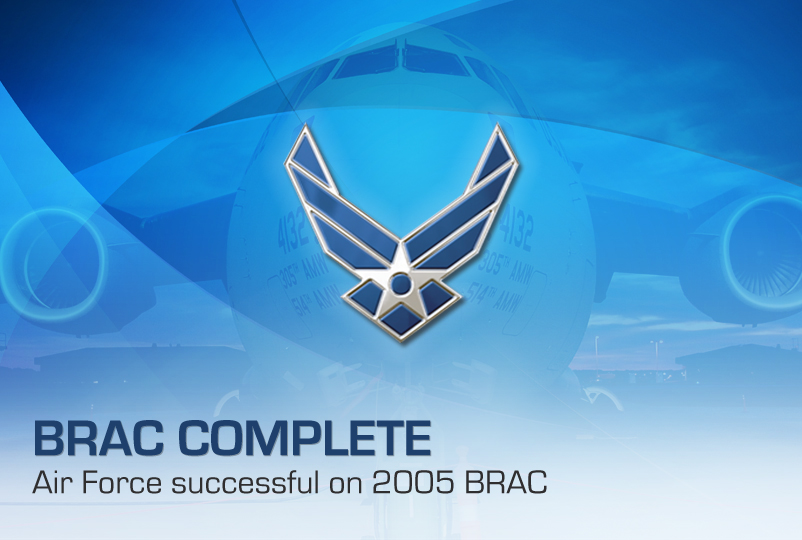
BRAC Complete